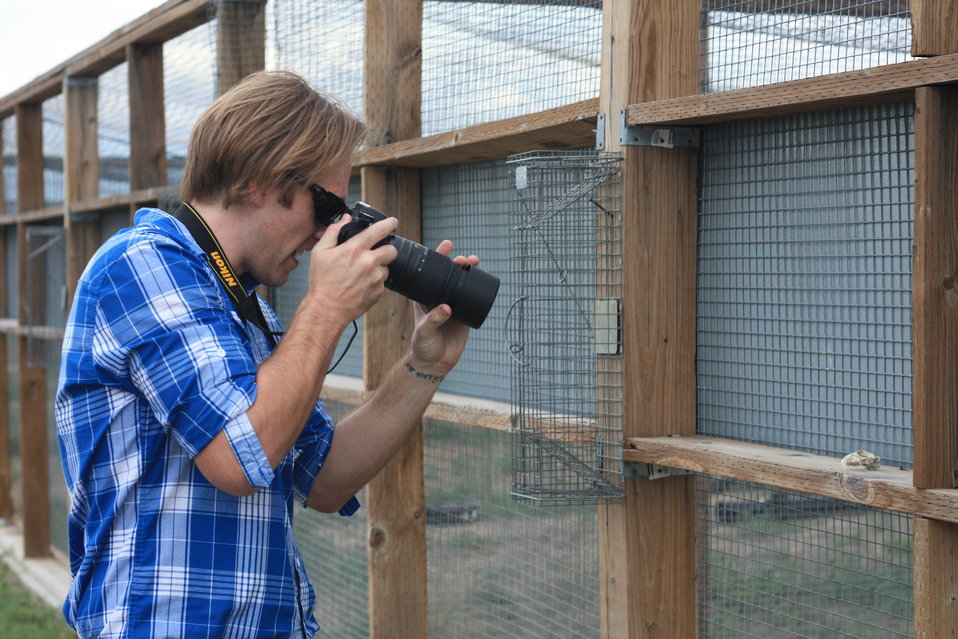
Interns visit the NBFFCC

In the summer of 2012, USFWS Region 6 interns visited the National Black-footed Ferret Conservation Center (NBFFCC) in Colorado to learn how the program reintroduces the endangered Black-footed ferret back into its native habitat.

Here, Ryan Moehring snaps some photos of the outdoor preconditioning pens!